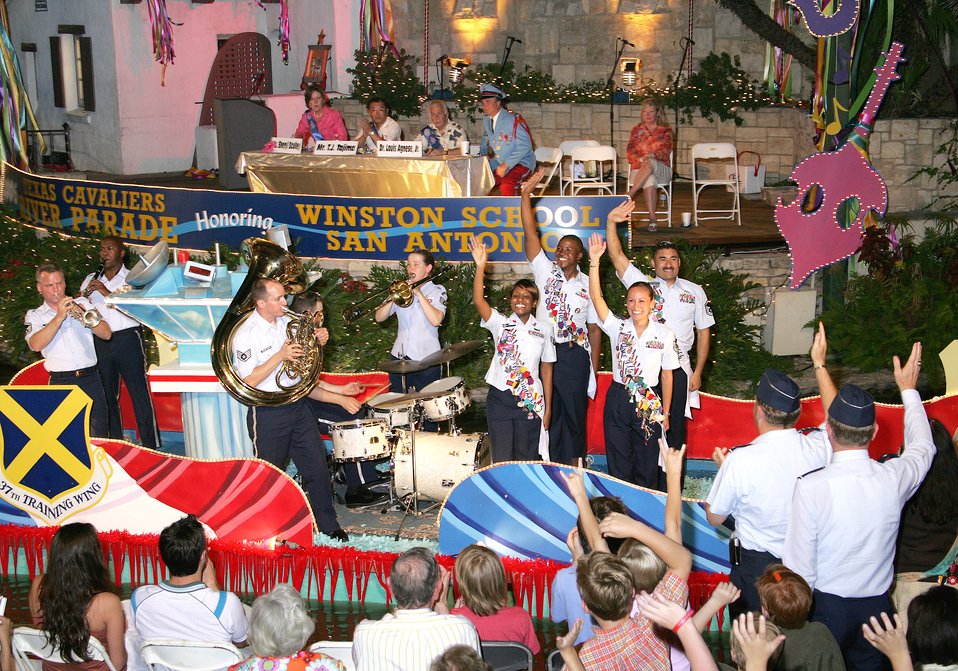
Viva Fiesta!

Military ambassadors with the 37th Training Wing at Lackland Air Force Base, Texas, and the 12th Flying Training Wing at Randolph AFB, Texas, roll down the river on a barge during the Texas Cavaliers River Parade in San Antonio on Monday, April 24, 2006. This parade is one of several events held during Fiesta, a 10-day celebration to honor the memory of the heroes of the Alamo and the Battle of San Jacinto in 1836. Also on the float are members of the Air Force Band of the West from Lackland.